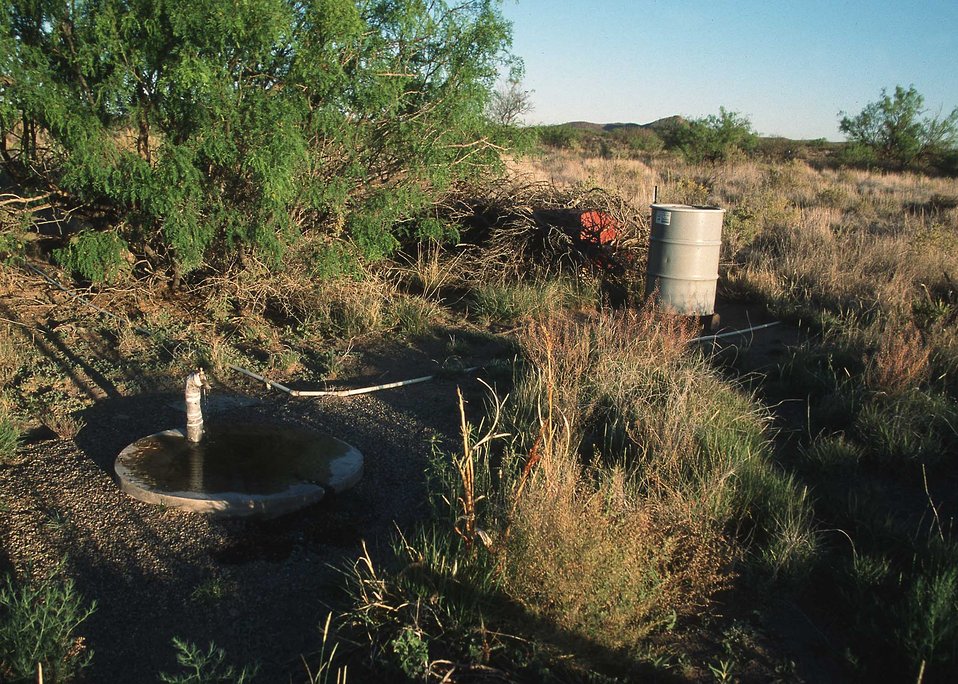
Range conservationist inspects a watering device in this southern New Mexico wildlife habitat area.